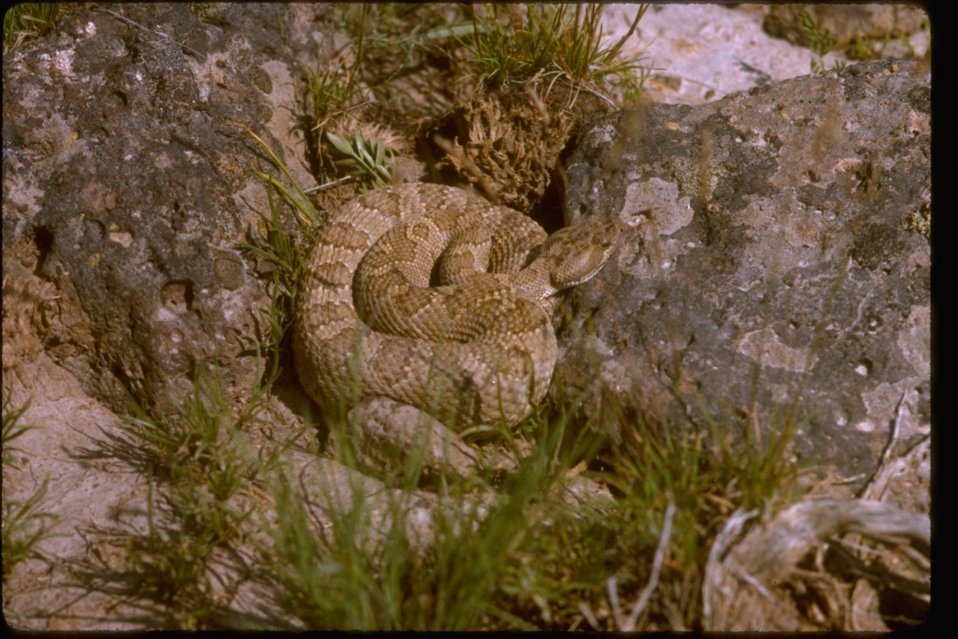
Rattlesnake found in the Sperry Creek Wilderness Study Area. OR 3-35